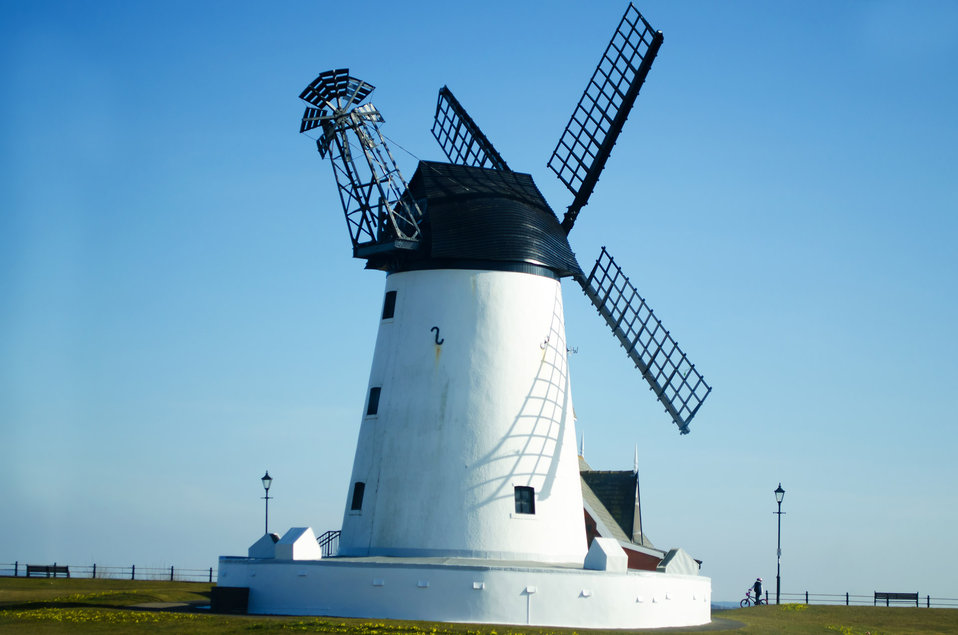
Windmill

Old windmill.